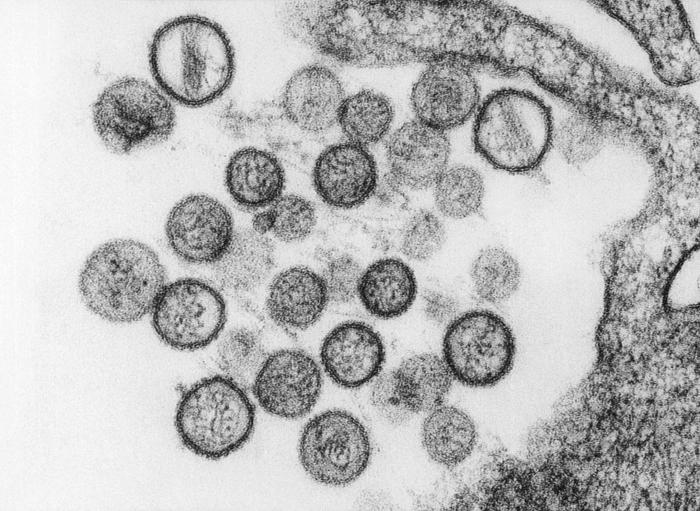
This transmission electron micrograph (TEM) revealed the ultrastructural appearance of a number of virus particles, or 'virions', of a hantavirus known as the Sin Nombre virus (SNV).